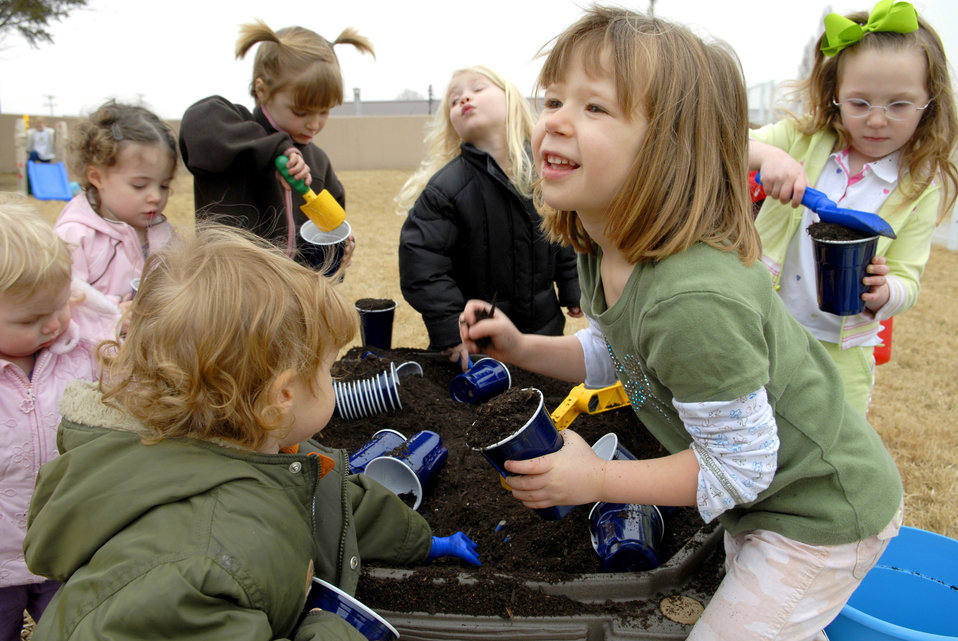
Quality of Life in South Korea

The Osan Community Garden at Osan Air Base, South Korea, was created to serve as another tool to enhance children's education and to provide nature and sustainable living projects for Osan children. A main priority for U.S. Forces Korea officials is to maintain and improve facilities, services, schools and medical capabilities.